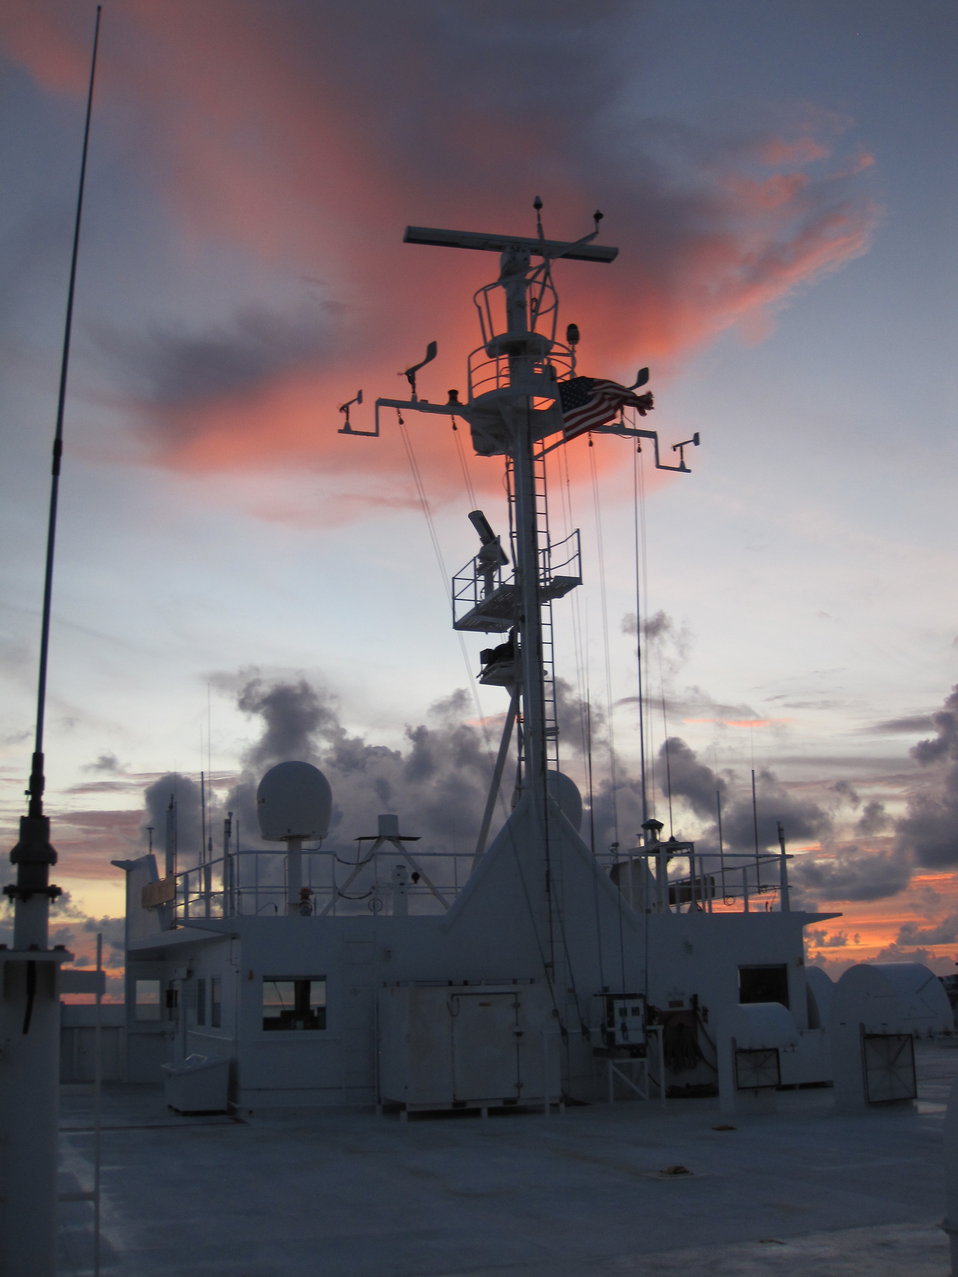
Dusk on the Military Sealift Command hospital ship USNS Mercy

Foreign Service Liaison Officer Thomas Weinz captures a photo of dusk on the Military Sealift Command hospital ship USNS Mercy (T-AH 19) on May 29, 2010, while transiting the Java Sea during Pacific Partnership 2010, the fifth in a series of annual U.S. Pacific Fleet humanitarian and civic assistance endeavors to strengthen regional partnerships.